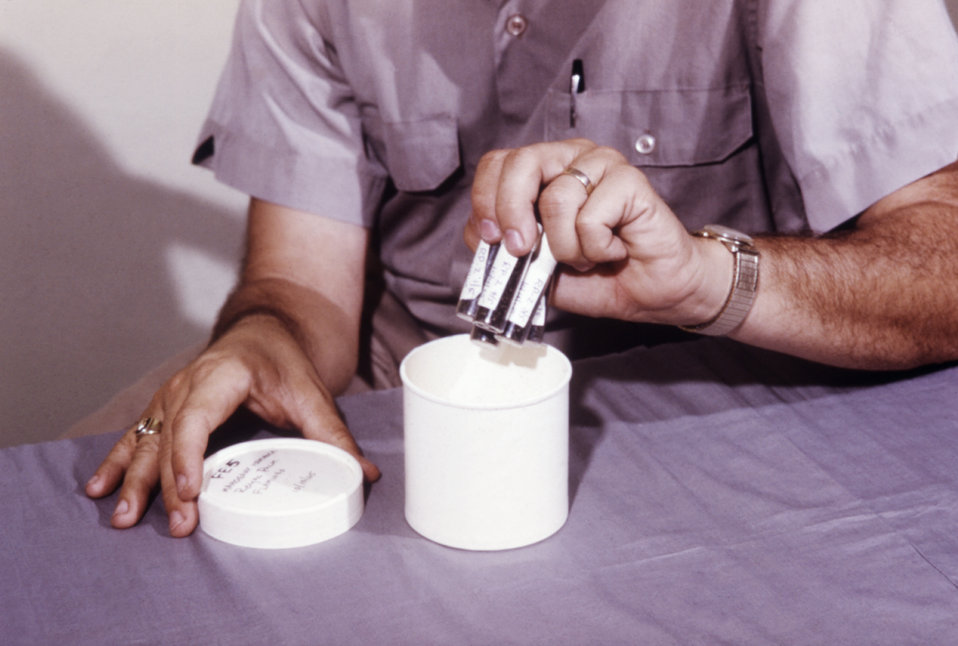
This CDC field researcher is placing labeled mosquito filled tubes in pint cartons for proper storage.